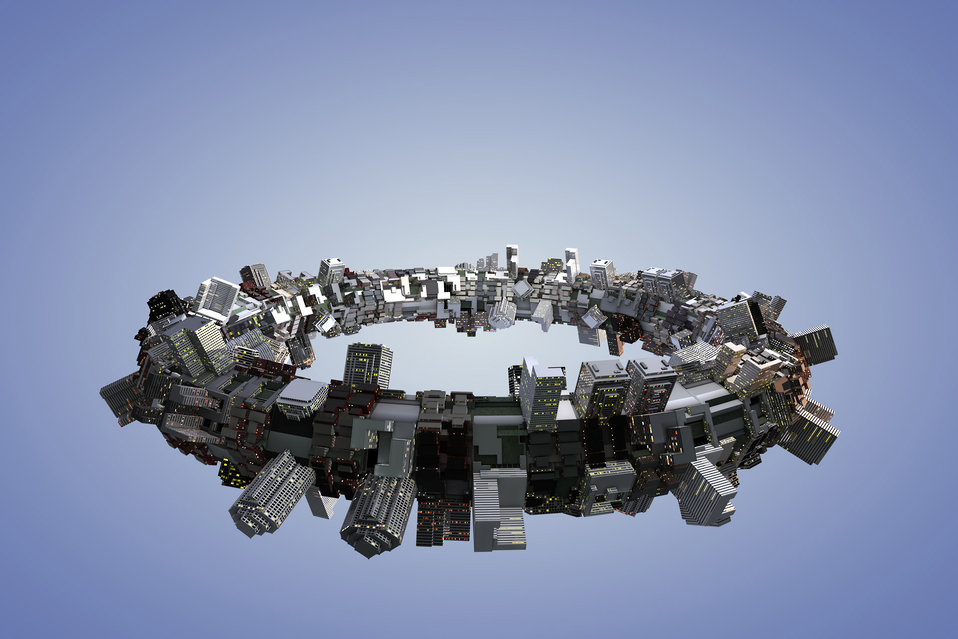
Megalopolis

Circle of sky-scrapers and buildings in high resolution.